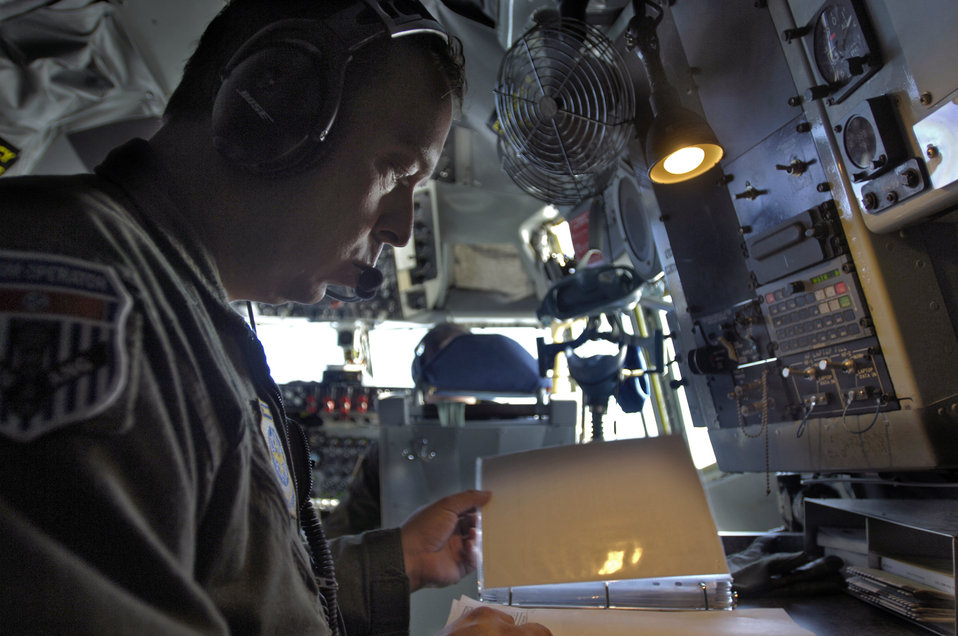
Airmen, drug runners play game of cat and mouse

Master Sgt. Wayne Atkins, a KC-135 Stratotanker flight engineer, fills in flight documents Aug. 1 during a preflight inspection at Forward Operating Location, before a refueling mission over the Pacific Ocean. The Tennessee Air National Guard's 134th Air Refueling Wing deployed to the location to provide aerial refueling support for surveillance missions flown by deployed E-3 Sentry airborne warning and command systems aircraft.